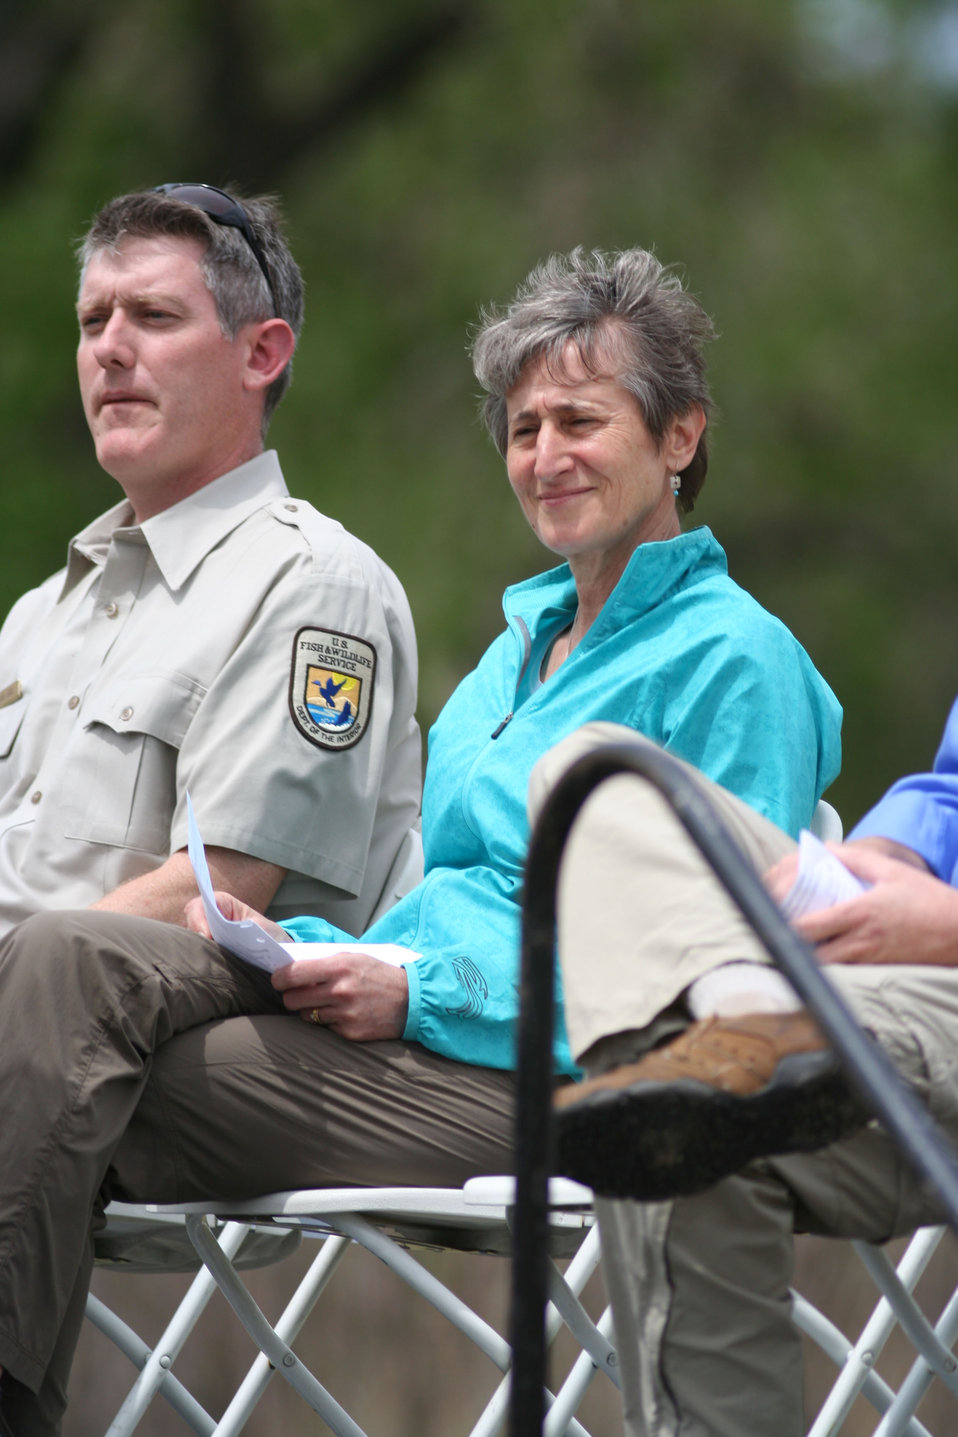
David Lucas and Sally Jewell

RMA Refuge Manager David Lucas and Interior Secretary Sally Jewell at a ceremony announcing youth conservation funding.